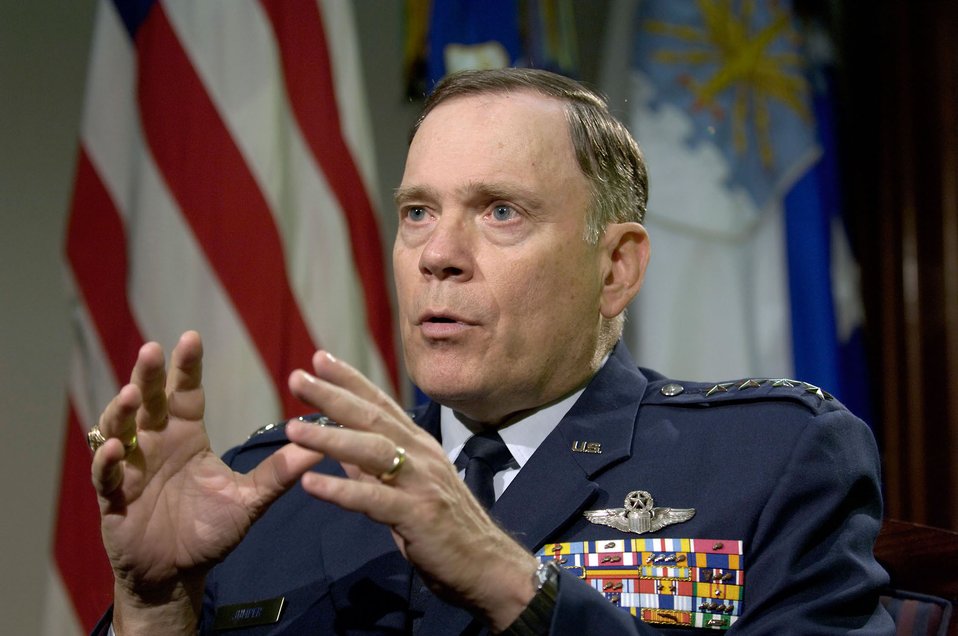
Jumper: Airmen haven't changed at all

WASHINGTON -- Air Force Chief of Staff Gen. John P. Jumper talks about his 39-plus years of Air Force service. He will retire from the Air Force in September.